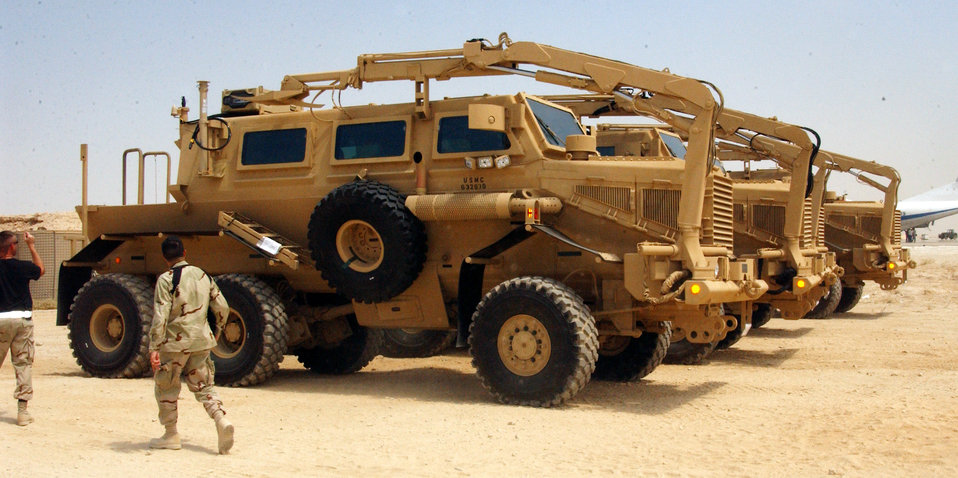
Deployed Airmen load, help deliver new 'Buffaloes'

Tech. Sgt. Shawn Tague shows Lt. Col. Gerard Couvillion the Mine Resistance Ambush Protected vehicles before loading them into a C-17 Globemaster III Aug. 25 at Al Asad Air Base, Iraq. The new MRAP Category III Buffalo models, which cost between $600,000 and $1 million each, will phase out the High Mobility Multipurpose Wheeled Vehicles, also known as Humvees. MRAPs are designed with V-shaped bottoms raised more than 3 feet off the ground to reduce servicemembers casualties by protecting them from improvised explosive devices, and to increase their mobility and enhance mission success throughout the areas of responsibility. Sergeant Tague is assigned to the 438th Aerial Port Flight and is deployed from Pope Air Force Base, N.C. Colonel Couvillion is the 438th Expeditionary Support Squadron commander.